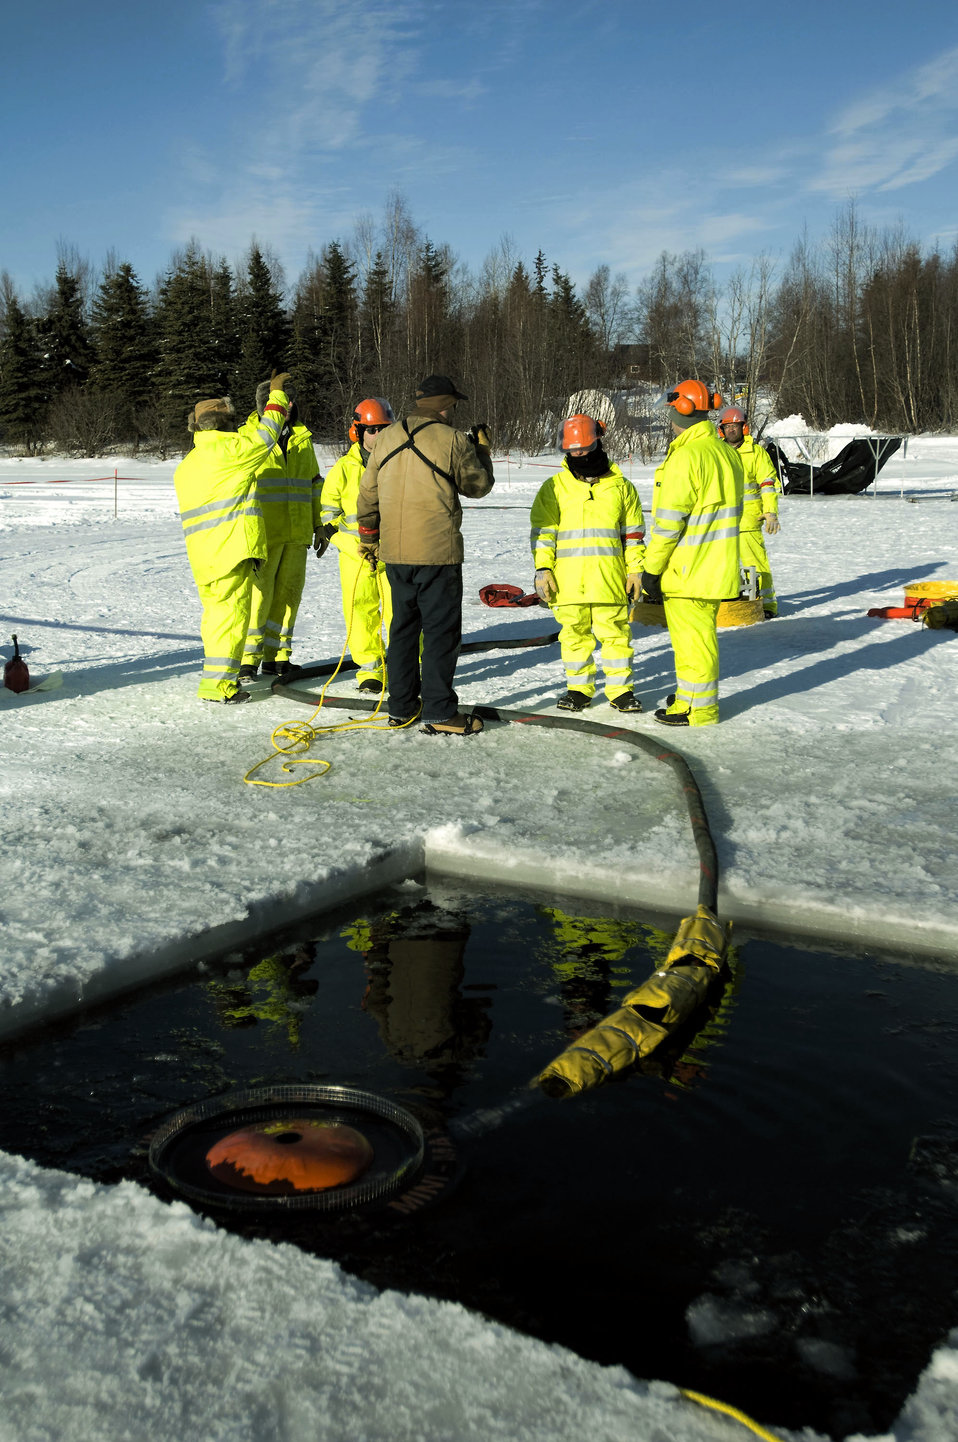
611 Civil Engineer Squadron preps for oil spill

Ice Ops participants use a Weir skimmer to suck water and oil into a filter plate. Several Airmen were on the base's Six-mile Lake to practice oil spill recovery tactics at Elmendorf Air Force Base, Alaska.